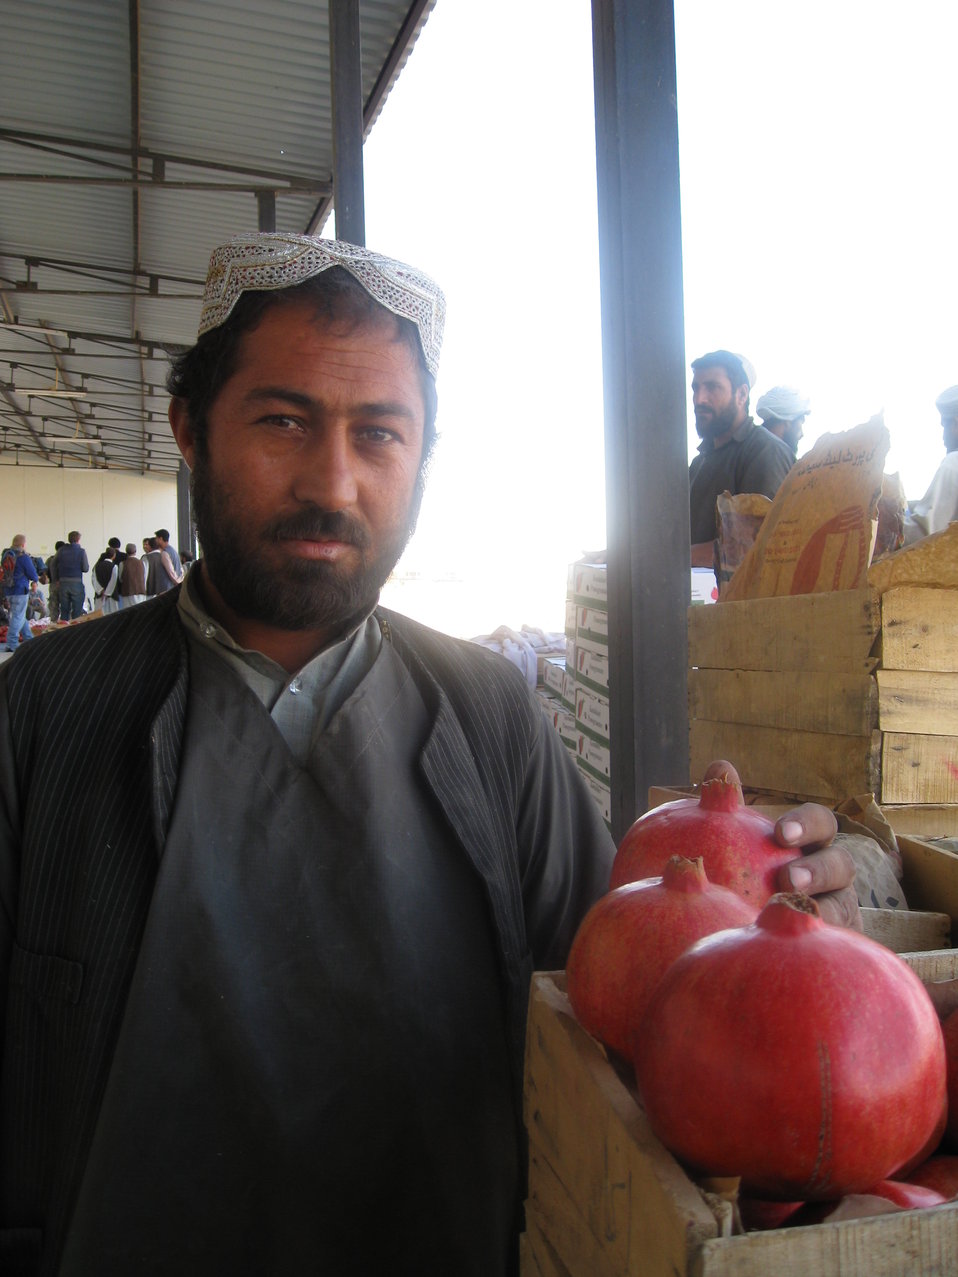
pomegranates kandahar 111407 032